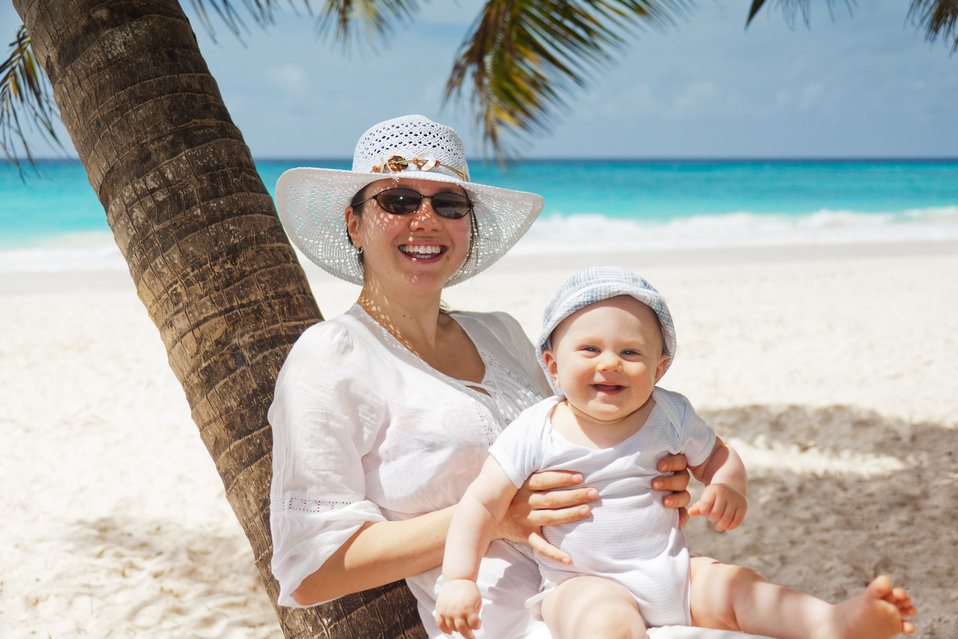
Woman and baby on the beach

Young woman and a small baby on tropical beach in caribbean.